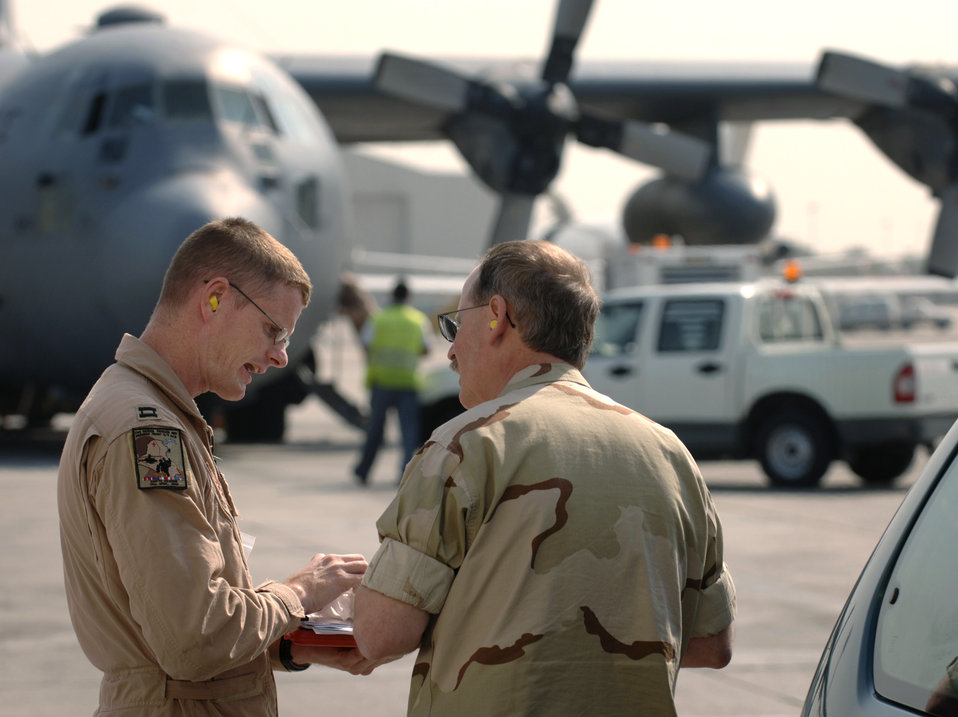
Aeromedical evacuation mission

During a stop in Bahrain, Kuwait, flight nurse Capt. Nathan Ferguson, left, coordinates movement of patients with Navy medical coordinator, Petty Officer 1st Class Emanuel Waddell. Captain Ferguson is with the 379th Expeditionary Aeromedical Evacuation Squadron.